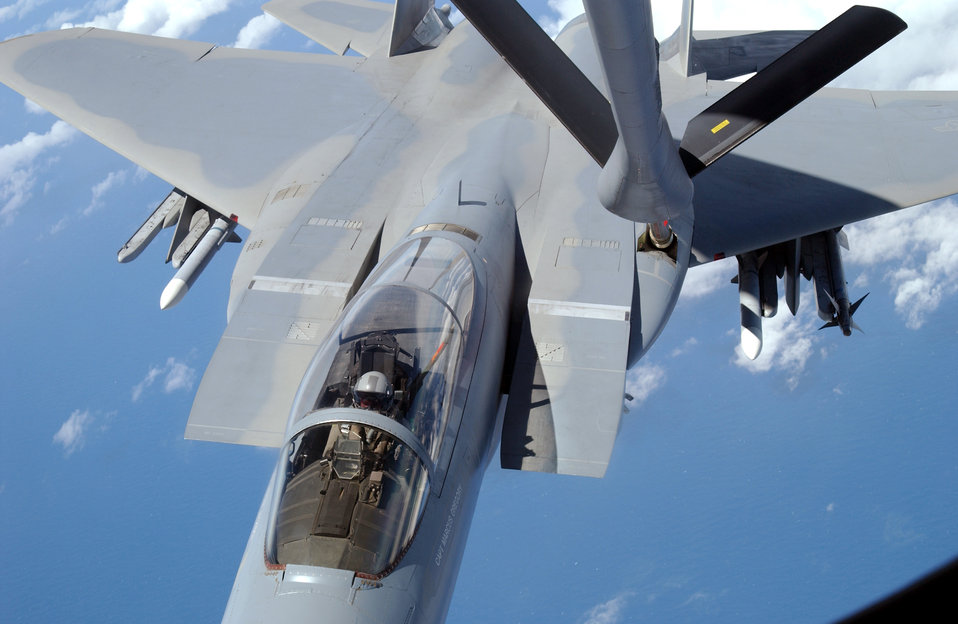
Over the South Pacific

ANDERSEN AIR FORCE BASE, Guam (AFPN) -- Over the South Pacific, F-15 Eagles are refueled from a KC-135 Stratotanker on April 25. The aircraft are deployed from Kadena Air Base, Japan, for Tandem Thrust '03, an exercise conducted in the Mariana Islands. The exercise includes forces from the United States, Canada and Australia.